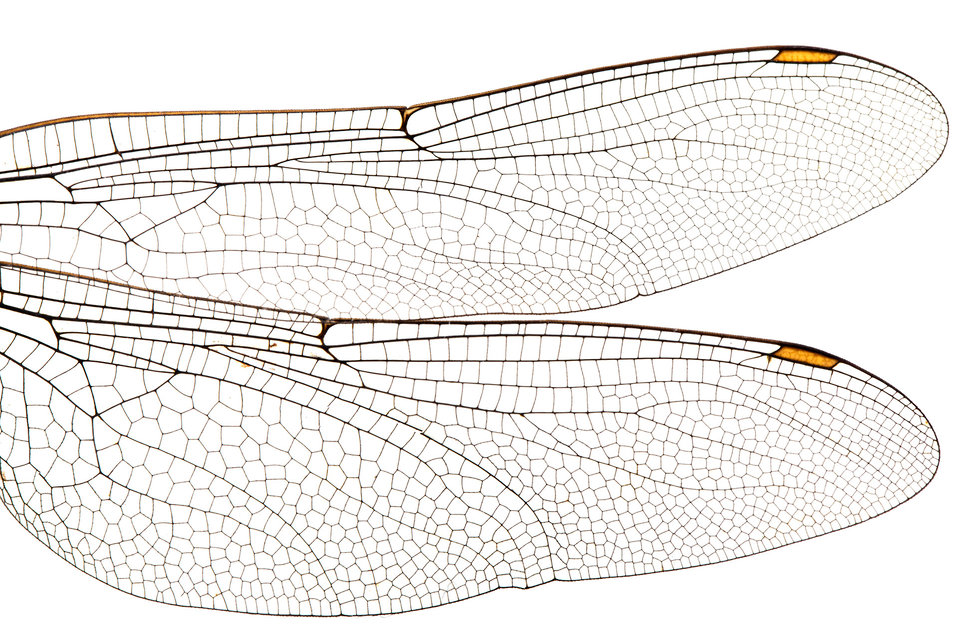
Dragonfly wings

Macro photo of a dragonfly wings isolated on white background.